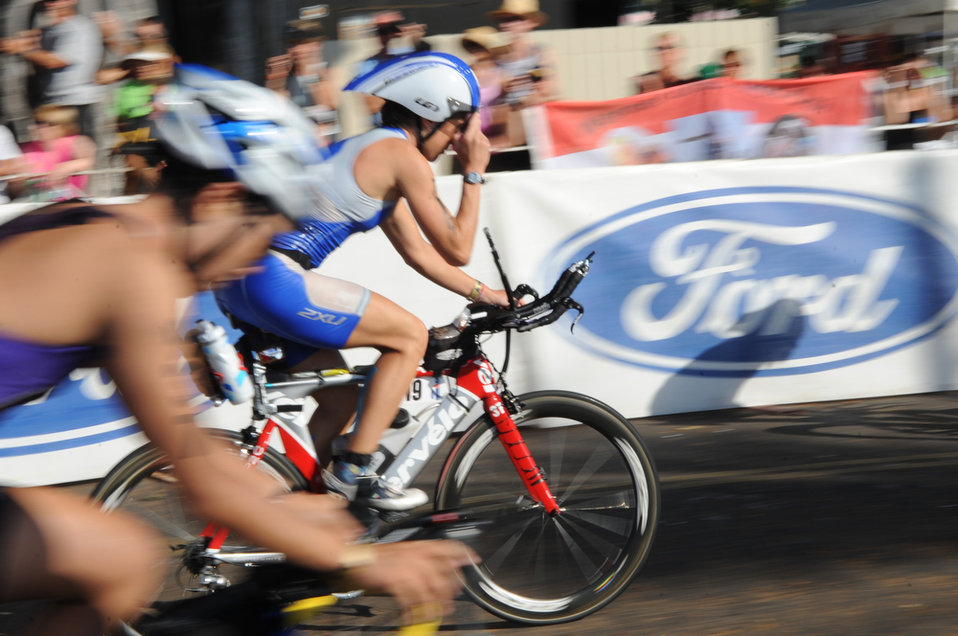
2010 Ironman World Championship

Capt. Jamie Turner adjusts her visor as she speeds by the crowd after transitioning from the 2.4-mile swim to the 112-mile bike race while competing in the 2010 Ironman World Championship Oct. 9, 2010, at Kona, Hawaii. Captain Turner is a C-17 Globemaster III pilot at Joint Base Charleston, S.C. She finished with an overall time of 10:48:31.